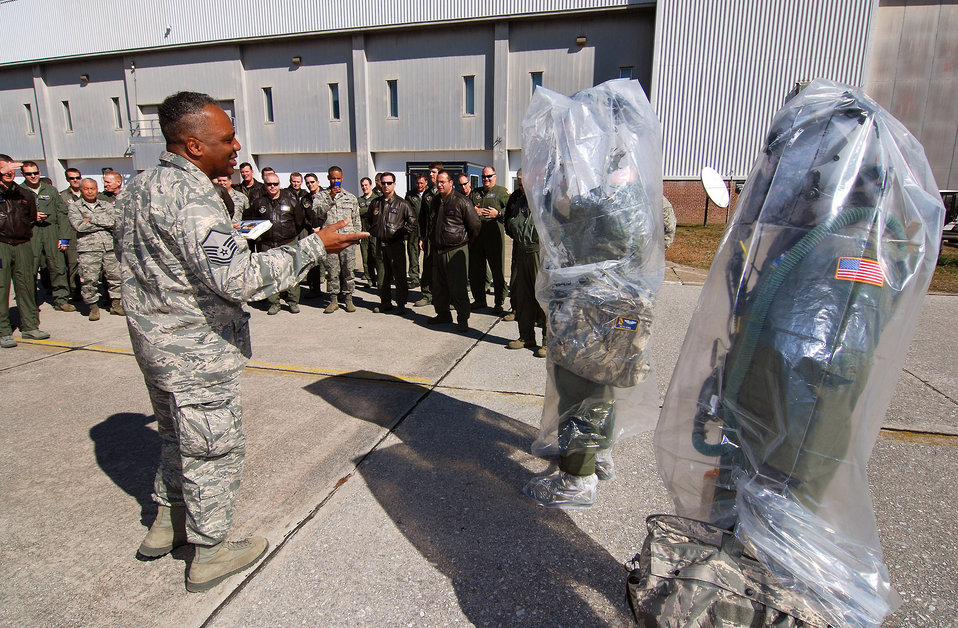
Aircrew Decontamination Training

Master Sgt. Mike Varnado briefs 94th Airlift Wing aircrew members at the starting point for aircrew decontamination training Feb. 6, 2011, at Dobbins Air Reserve Base, Ga. Sergeant Varnado is the aircrew flight equipment training NCO in charge.